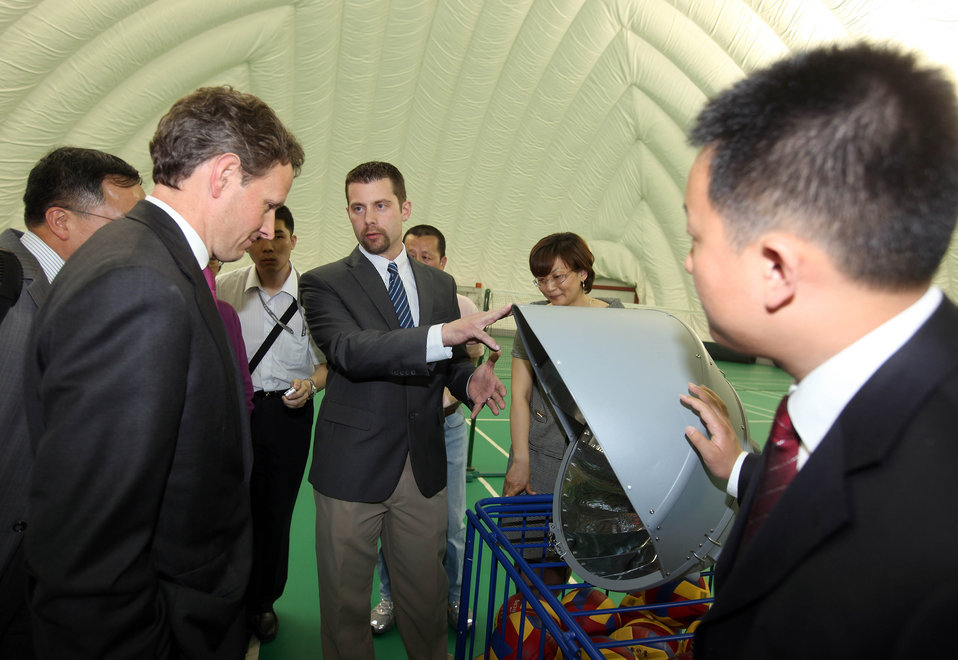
SandED, 5/23/10

Representatives of Iowa-based Musco Sports Lighting brief Secretary Geithner on the high-tech, clean lighting they installed at the Renmin University High School basketball facility in Beijing on May 23, 2010.